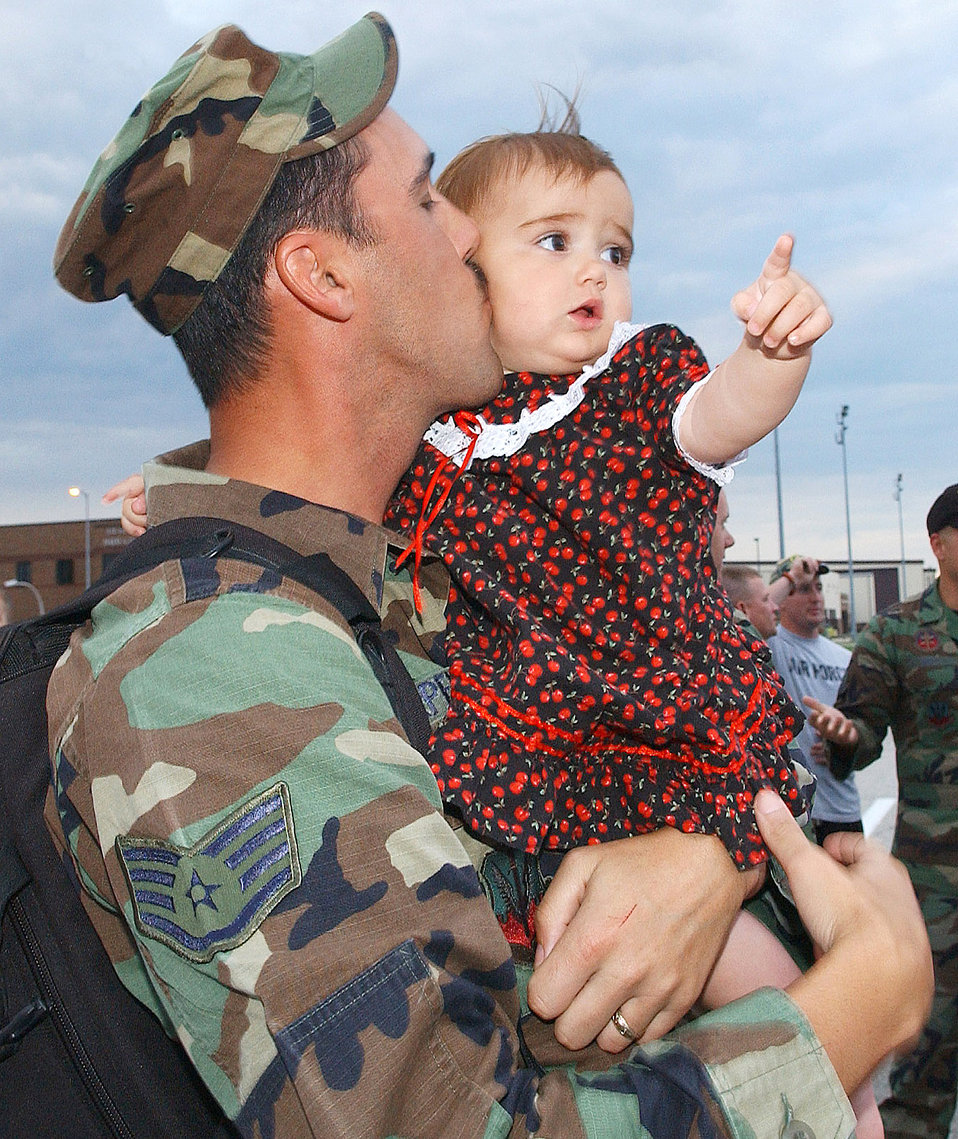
Welcome home

Staff Sgt. Christopher Carpenter kisses his 18-month-old daughter, Cheyenne, upon his return to Whiteman Air Force Base, Mo. Sergeant Carpenter, assigned to the 509th Communications Squadron, returned Aug. 29 from a four-month deployment in support of Operation Ocean Fury at Andersen AFB, Guam.